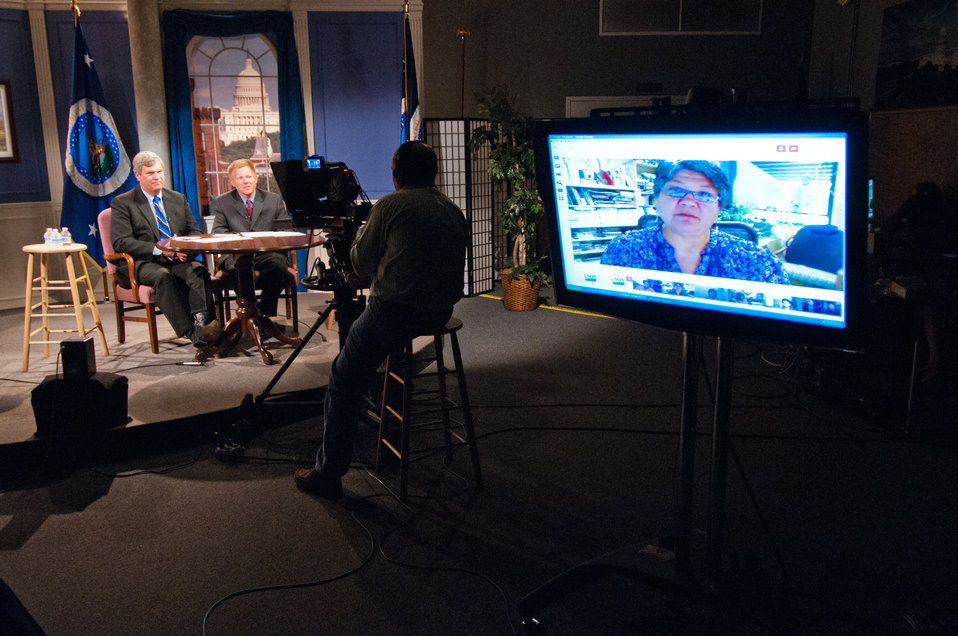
Agriculture Secretary Tom Vilsack and U.S. Department of Agriculture (USDA) StrikeForce Initiative Director Max Finberg listen to StrikeForce Initiative Beneficiary Colorado farmer Carol Baker Olguin discuss the benefits she and her family received through the USDA StrikeForce program during a Google Hangout at USDA in Washington, D.C. on Monday, Jun. 17, 2013. A panel of StrikeForce State coordinators joined Secretary Vilsack, Finberg and Olguin, partners and program recipients who will address frequently asked questions and provide guidance on how to be a part of the Initiative.